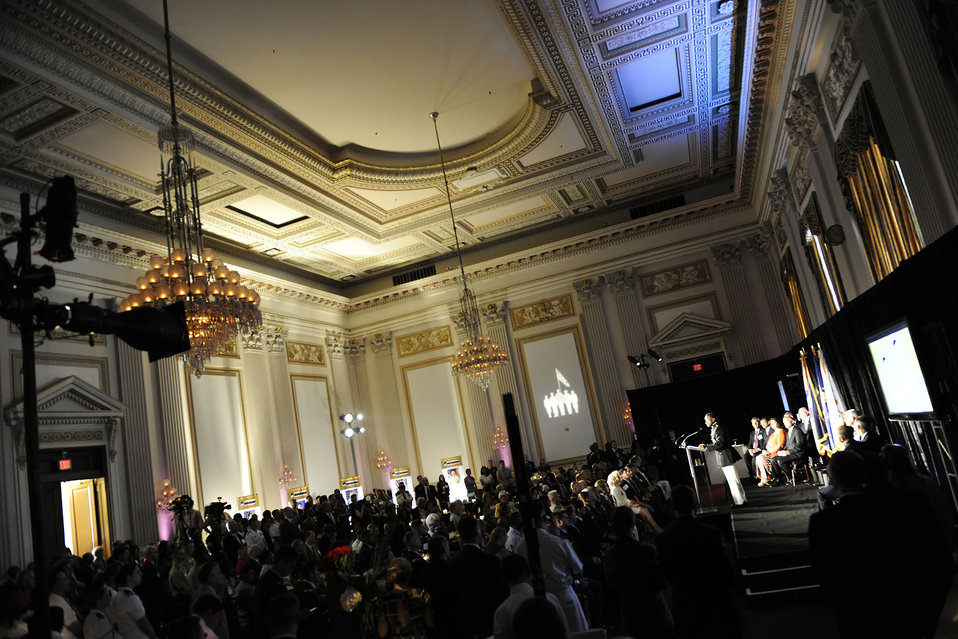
Times Airman of the Year

The Caucus Room in the Cannon House Office Building is full during the 2012 Military Times Service Members Awards ceremony July 19, 2012, in Washington, D.C. Master Sgt. Brandon Lambert, from the 728th Air Control Squadron, Eglin Air Force Base, Fla., was recognized as the 2012 Air Force Times Airman of the Year. Air Force Chief of Staff Gen. Norton Schwartz; Army Vice Chief of Staff Gen. Lloyd Austin III; Chief of Naval Personnel and Deputy Chief of Naval Operations Vice Adm. Scott Van Buskirk; U.S. Coast Guard Deputy Commandant for Mission Support Vice Adm. Manson Brown; and the Director of Marine Corps Staff Lt. Gen. Willie Williams presented the awards to the recipients from their respective services.